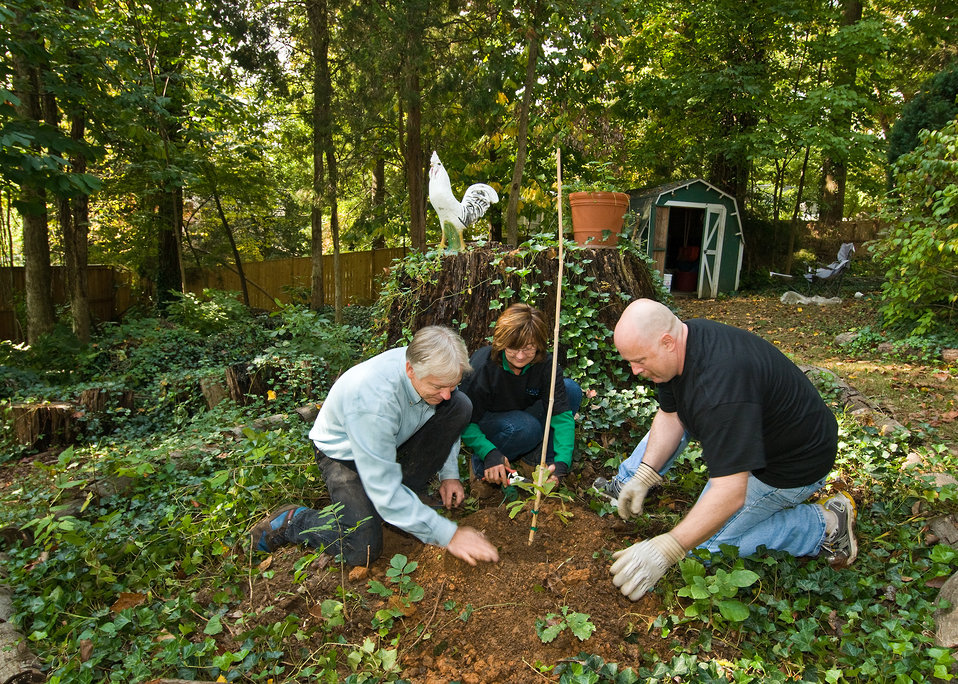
Robert Snieckus (left), National Landscape Architect, Natural Resources Conservation Service, Andree Duvarney (center), Special Assistant to the Chief, Natural Resources Conservation Service and Brian Symmes (right), “Eight Oaks” plant a progeny of one of the original oaks at “Eight Oaks” the home of Dr. Hugh Hammond Bennett the first Chief of the Natural Resources Conservation Service then the Soil Erosion Service at Dr. Bennett’s home in McLean, Virginia on Friday, October 15, 2010 as part of the celebration for the 75th Anniversary of the Natural Resources Conservation Service. The trunk of the oak tree behind has an approximate age of 350 years. USDA Photo 10di1524-4 by Bob Nichols.